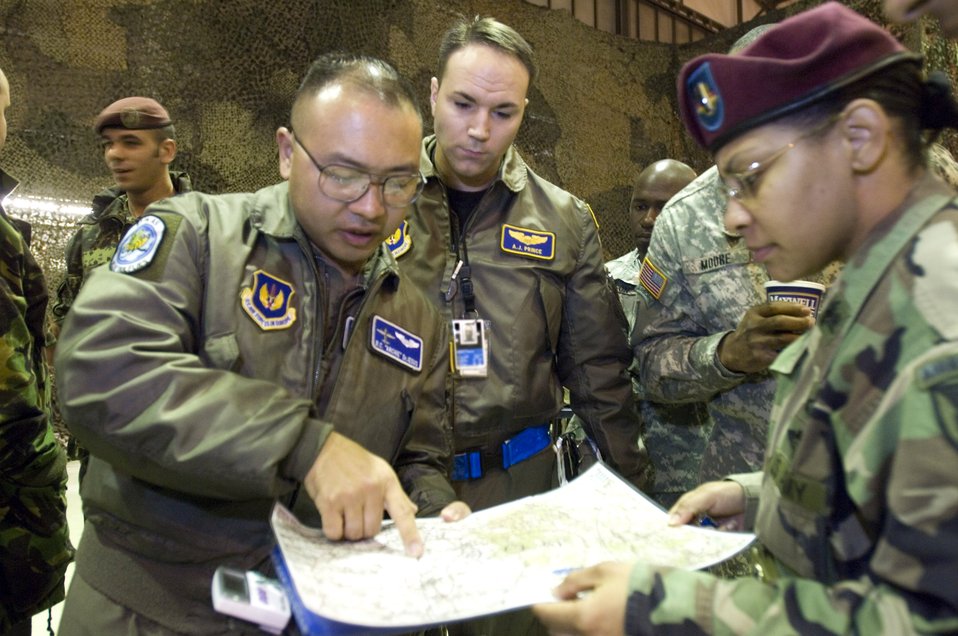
Multinational training

(Left to right) Capts. Ramoncarlos DeJesus and Aaron Prince discuss the day's paratrooper mission with Army Chief Warrant Officer 4 Petrice McKey at Ramstein Air Base, Germany, on Thursday, April 27, 2006. Captains DeJesus and Prince are C-130 Hercules crewmembers from the 37th Airlift Squadron at Ramstein. Warrant Officer McKey is with the 5th Quartermaster Detachment at nearby Kleber Kaserne.